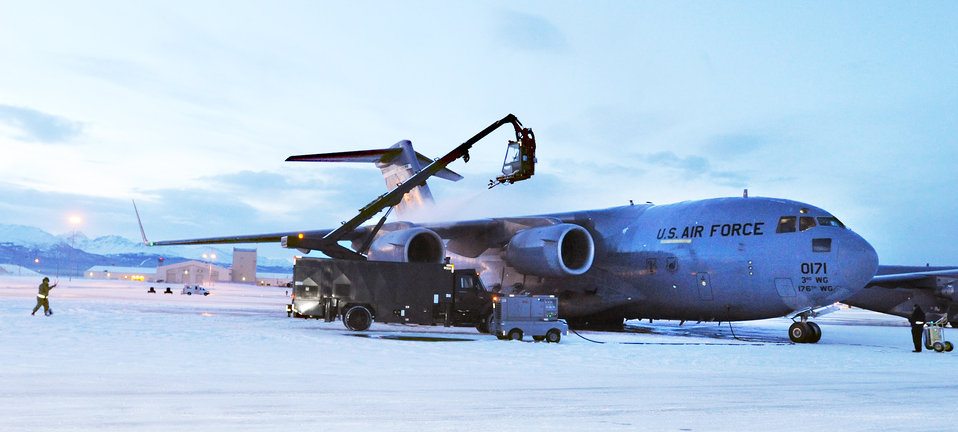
PACAF aircraft depart to assist Haiti relief effort

A C-17 Globemaster III is de-iced in preparation for a humanitarian mission to Haiti Jan. 19, 2010, at Elmendorf Air Force Base, Alaska. The 517th Airlift Squadron and the 249th Airlift Squadron is assisting in the aftermath of the earthquake that recently struck the island.